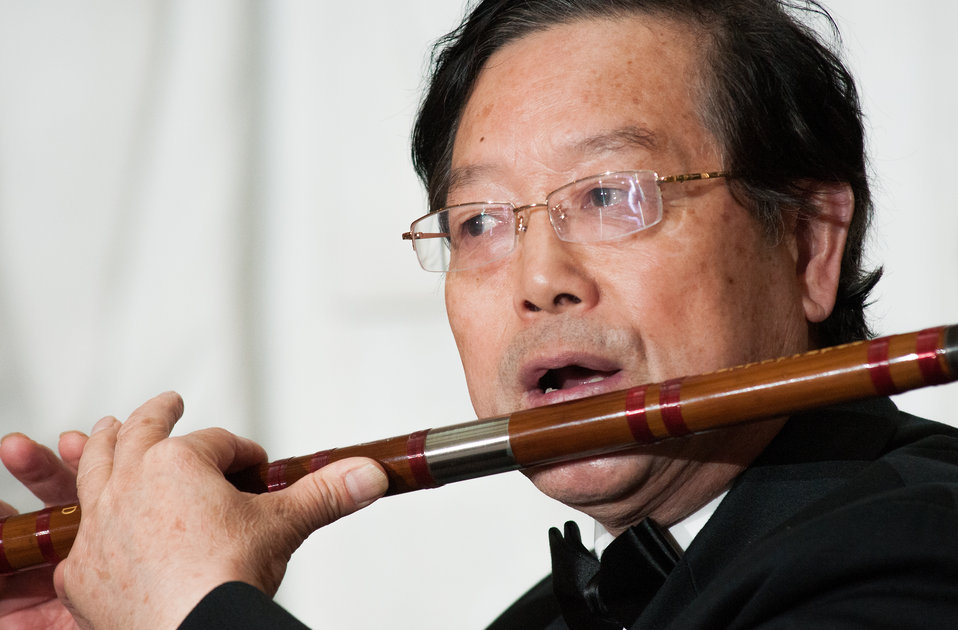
The Washington Chinese Traditional Orchestra Ensemble performs 'Melody of Purple Bamboo,' 'Jasmine Flower,' and 'Joys of Beaming,' during the U.S. Department of Agriculture (USDA) Asian Pacific American Heritage Month Observance, at the USDA headquarters, Whitten Building patio, in Washington, D.C., on Thursday, May 23, 2013. This year’s theme is “Building leadership; Embracing the Cultural Values and Inclusions.”